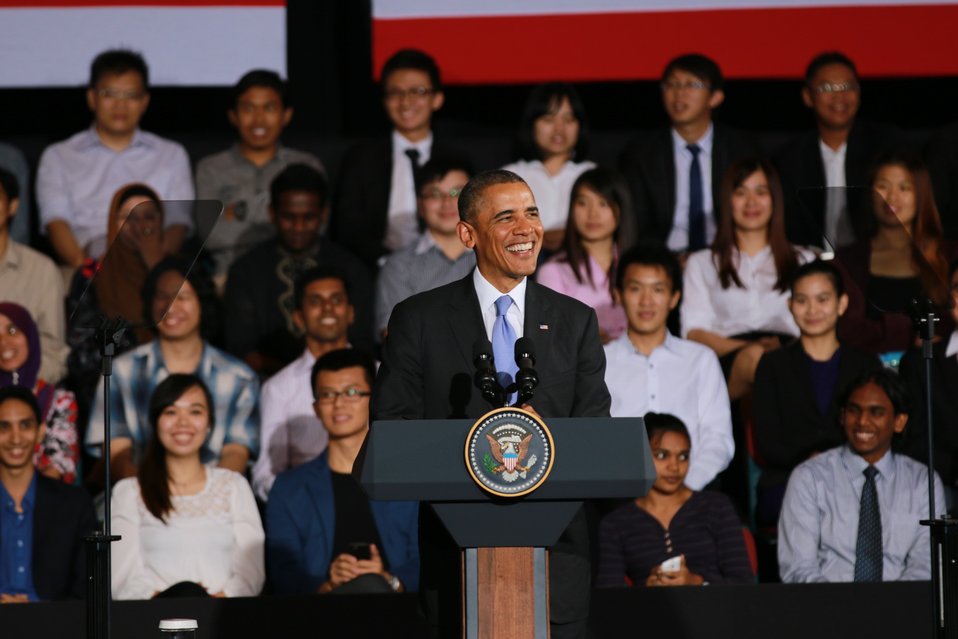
President Obama Delivers Remarks at a Young Southeast Asian Leaders Initiative Town Hall

President Barack Obama delivers remarks at a Young Southeast Asian Leaders Initiative Town Hall in Kuala Lumpur, Malaysia on April 27, 2014.